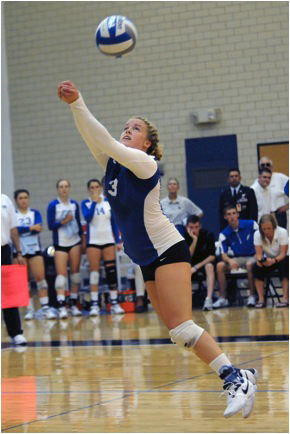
Cadet's show promise during women's volleyball tournament

Air Force's Kelly Spencer bumps the ball during play against Boise State University Aug. 27, 2010, at the U.S. Air Force Academy in Colorado Springs, Colo. The Falcons fell to Boise State 1-3 with scores of 23-25, 18-25, 26-24, and 25-18.